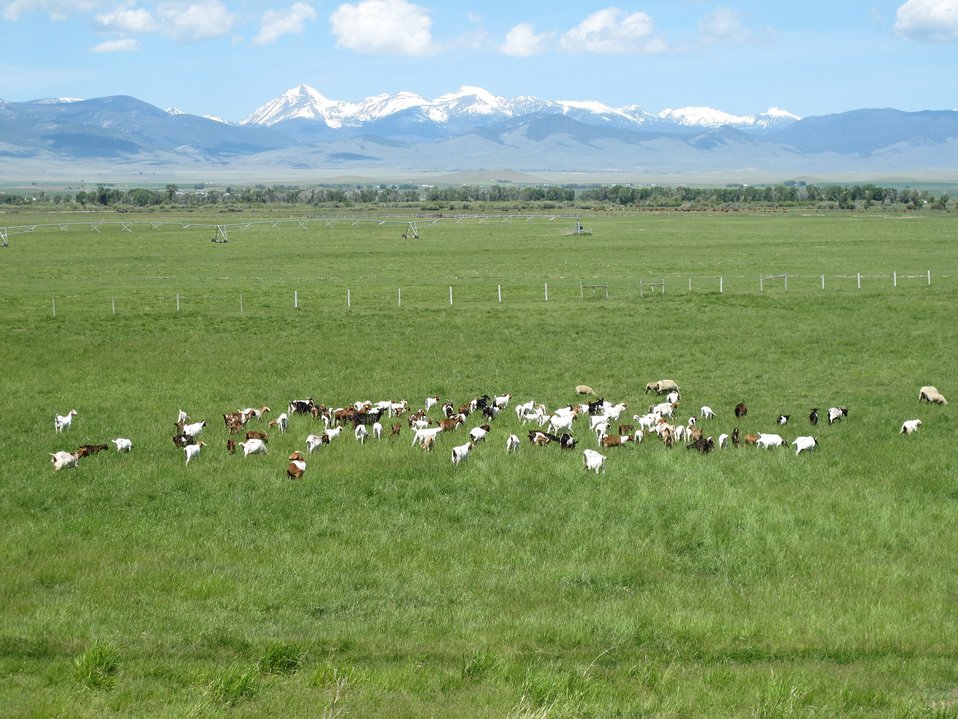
The old cattlemen would have rolled over in their graves - sheep and goats are plentiful in the intermontane valleys of southwest Montana.